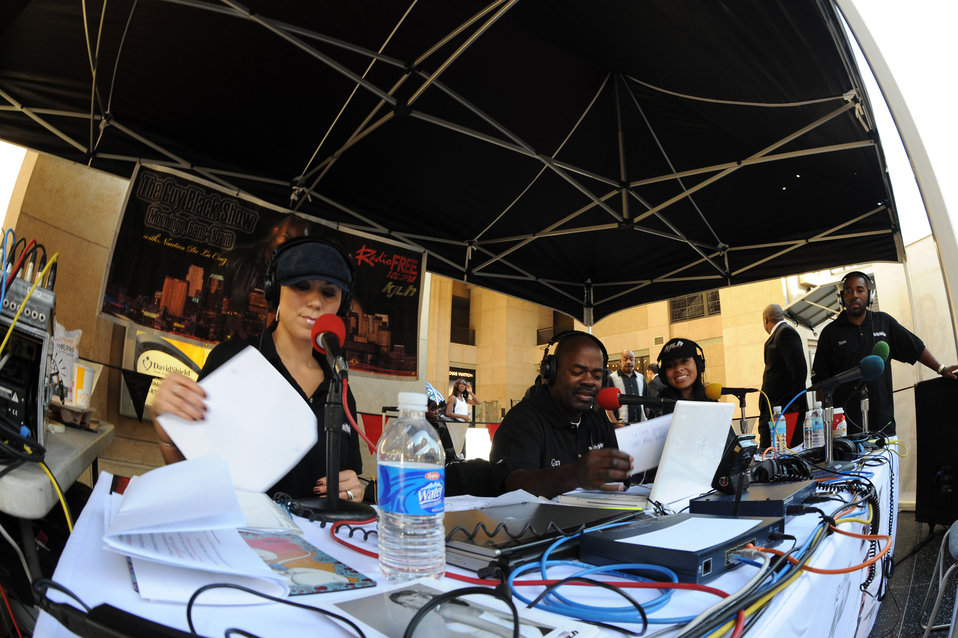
Air Force Expo in Hollywood

Nautica de la Cruz, Guy Black and Adai Lamar host a live show of,